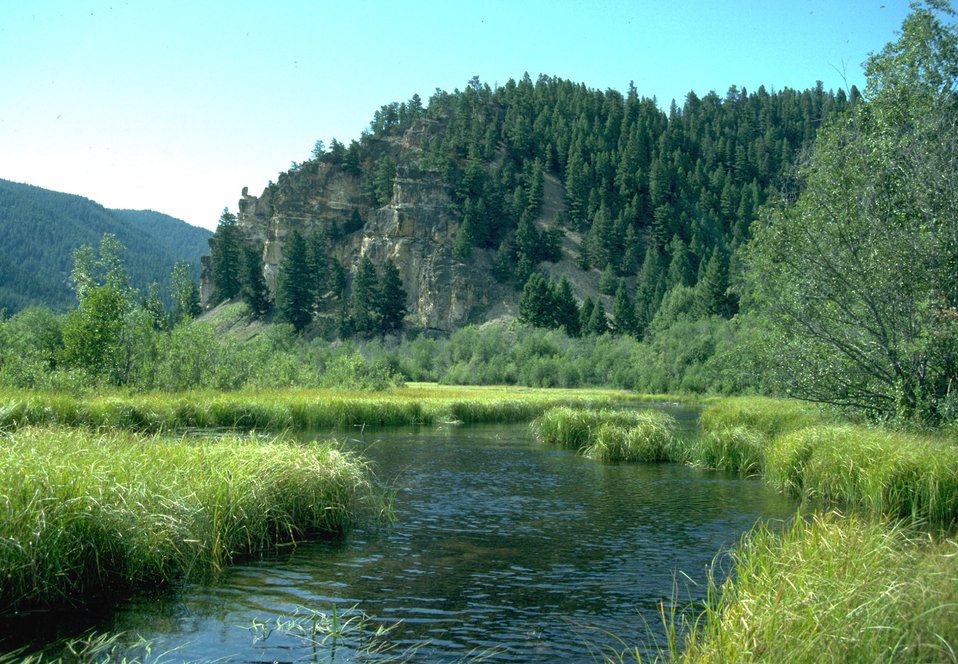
Rock Creek in summer